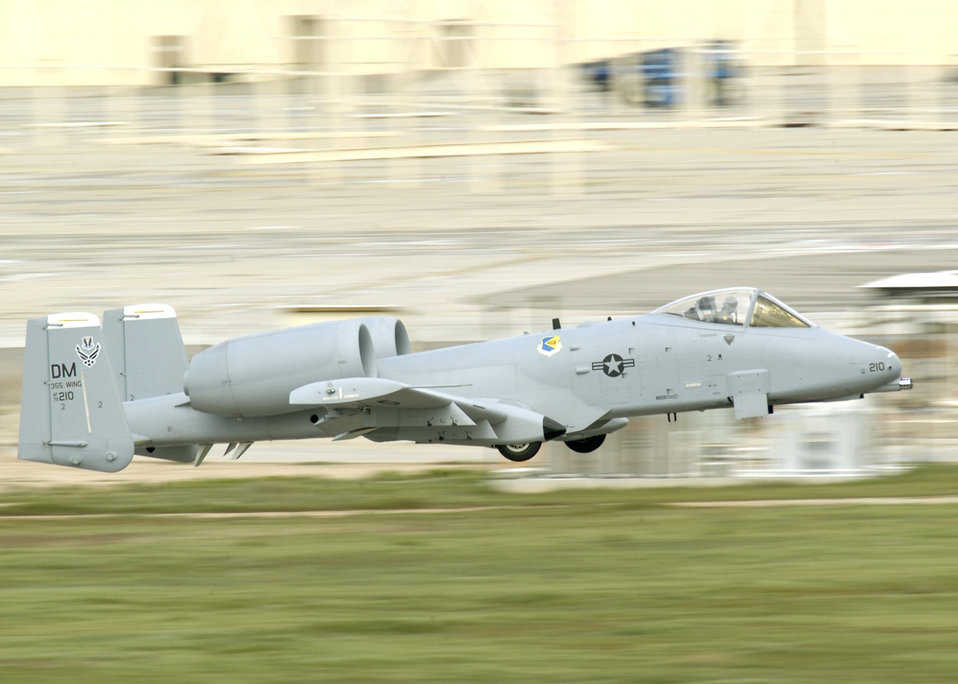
Cleared for takeoff

DAVIS-MONTHAN AIR FORCE BASE, Ariz. -- An A-10 Thunderbolt II flies by the air traffic control tower during the 2005 Heritage Flight Conference here. The Heritage Flight program was established in 1997 supporting the Air Force's 50th anniversary. It involves today's state-of-the-art fighters flying in close formation with World War II and Korean War vintage fighters. The flight is designed to safely display the evolution of U.S. Air Force airpower and support Air Force's recruiting and retention efforts.